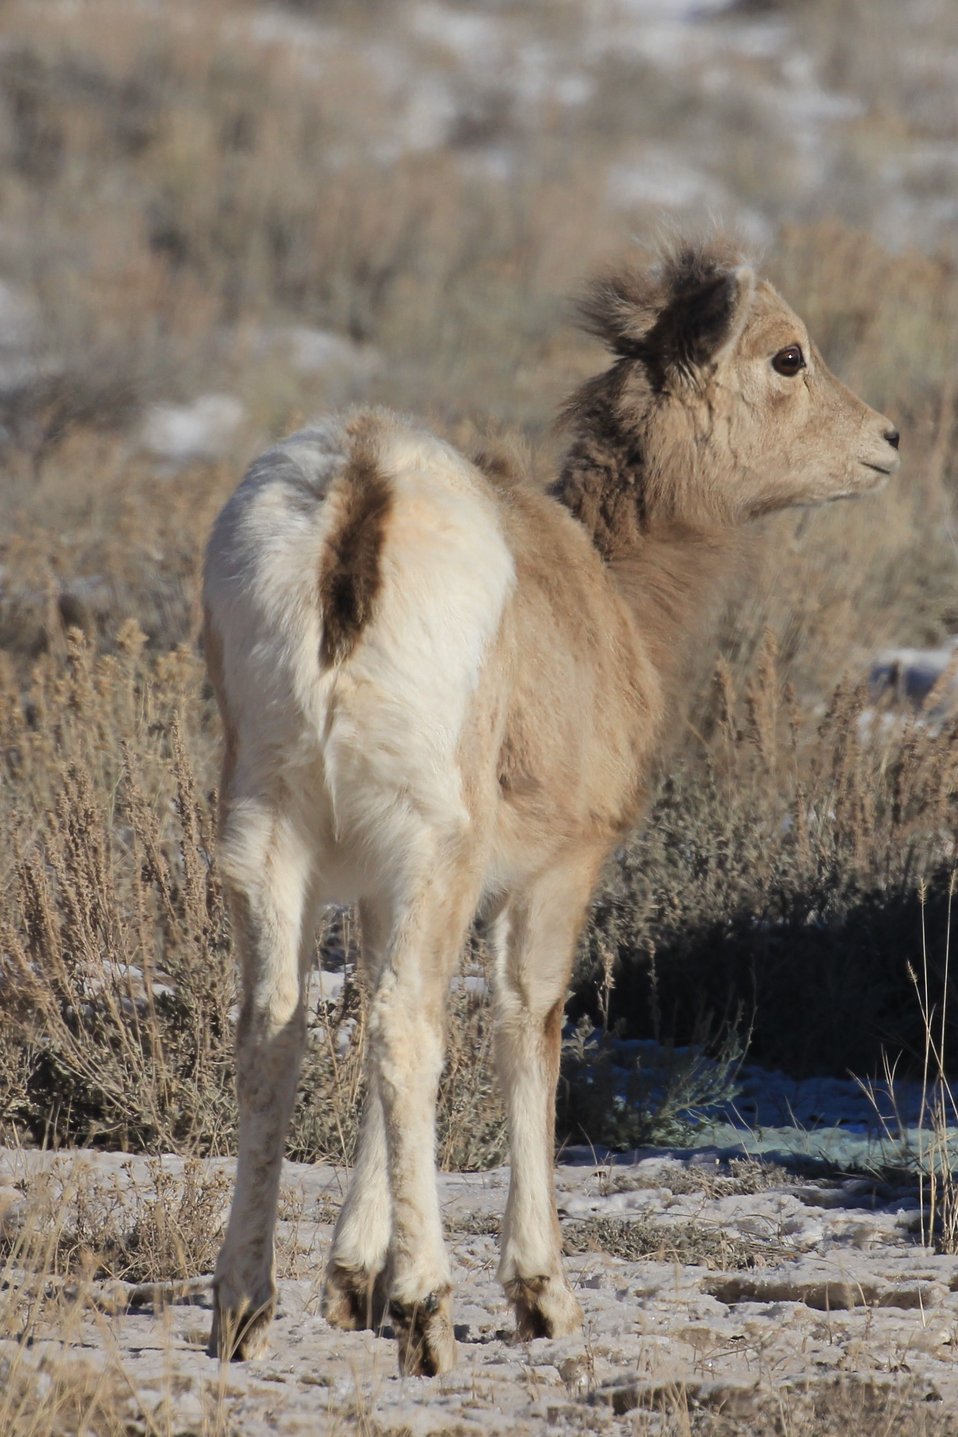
Not Too Far

A bighorn sheep lamb strays a short distance away from the rest of the herd.